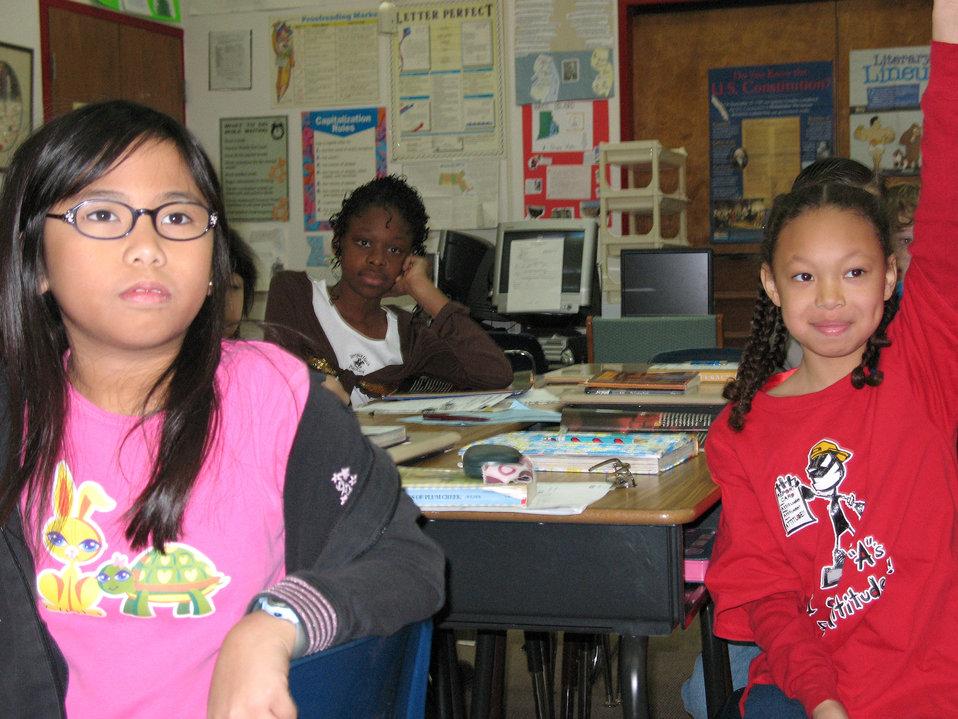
Volunteers teach students African-American heritage

Students at Yokota East Elementary School listen as a volunteer reads selected stories to them Feb. 9 at Yokota Air Base, Japan. This was one of many events Yokota AB's African-American Heritage Committee planned for African-American Heritage Month.